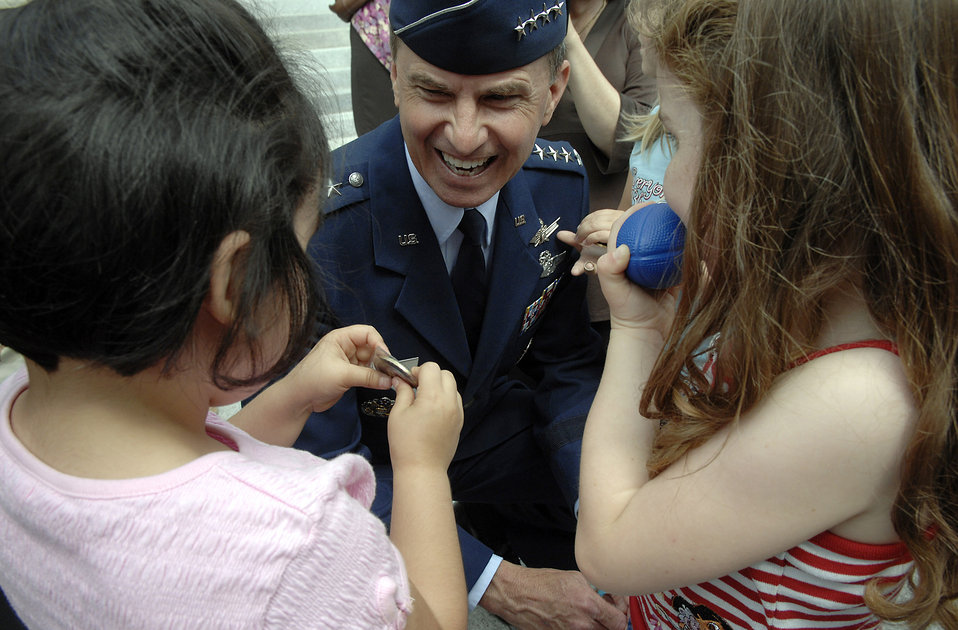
Air Force Week begins in Sacramento

Gen. Kevin P. Chilton talks with Christina, 4, (left) and Isabella, 5, after the Air Force Week California Proclamation Ceremony June 4 at Sacramento, Calif. The purpose of Air Force Week is to inform and educate the American public about the importance and roles of the Air Force in America's national defense. Christina and Isabella were visiting from nearby East End Child Care Center. General Chilton is the commander of the Air Force Space Command at Peterson Air Force Base, Colo.